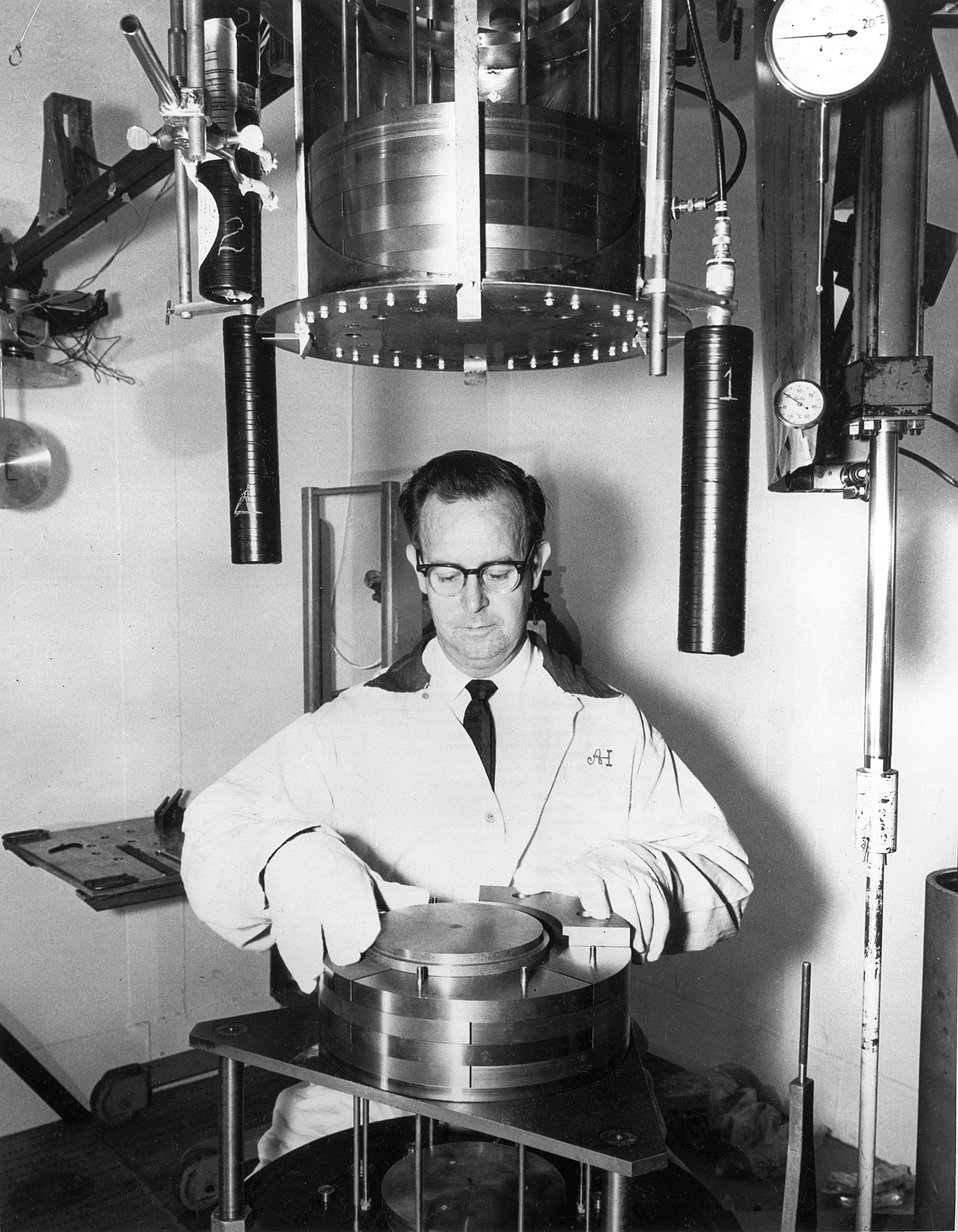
Space power reactor test...SNAP 10 reactor, designed to generate electricity for space vehicles directly without moving parts.